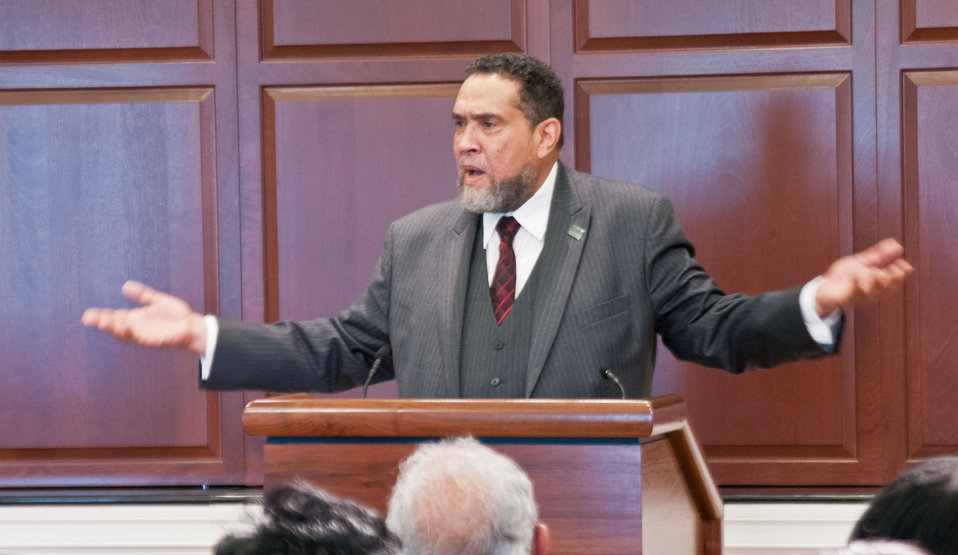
Tuskegee University President and Council of 1890 Universities Chair Gilbert Rochon, speaks during the 2012 Historically Black Colleges and Universities 1890 Land-Grant University Memorandum of Understanding Signing Ceremony on Friday, June 29, 2012, in the White House’s Eisenhower Executive Office Building, Washington, DC. It has been150 years since the first Morrill Act of 1862, which was signed by President Abraham Lincoln. The action established land-grant universities in every state and territory. The second Morrill Act of 1890 provided funding to designate separate institutions of higher learning for blacks in those states that did not open the doors of their universities to black students.